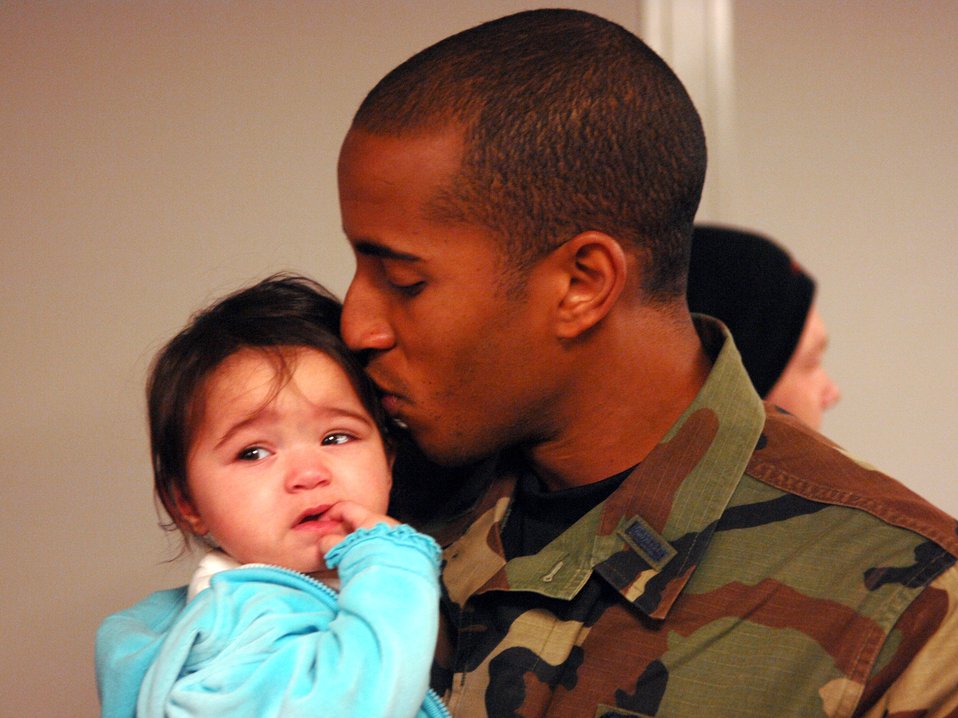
Minot Airmen return home from Andersen deployment

1st Lt. Dwayne Clark kisses his daughter, Mikaila, after returning from a deployment Jan. 30 to Minot Air Force Base, N.D. Lieutenant Clark and 109 other Minot AFB Airmen were met by friends and family upon arriving home from a five–month deployment to Andersen AFB, Guam. He is assigned to the 23rd Bomb Squadron.